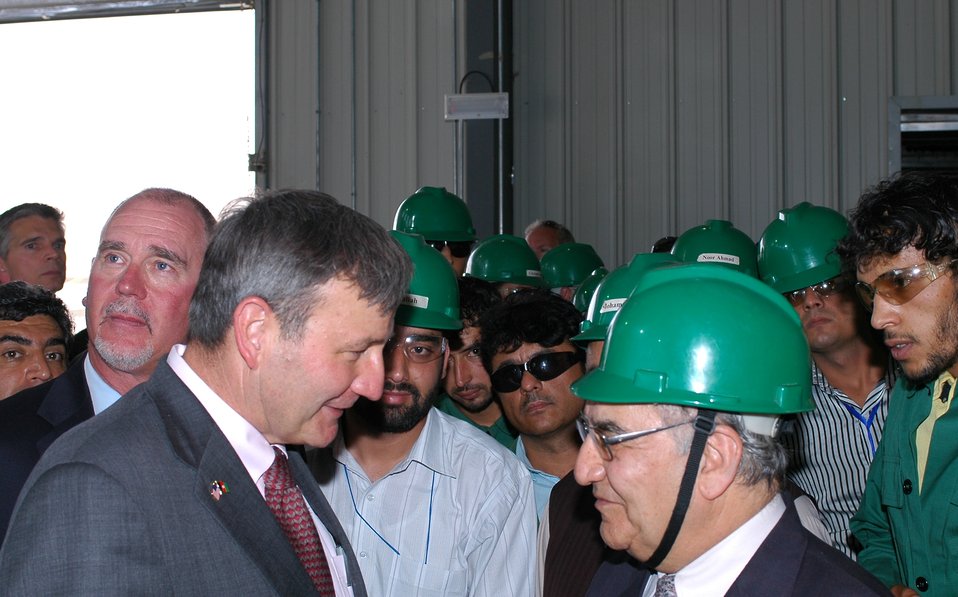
105 MW Tarakhil Power Plant Handover